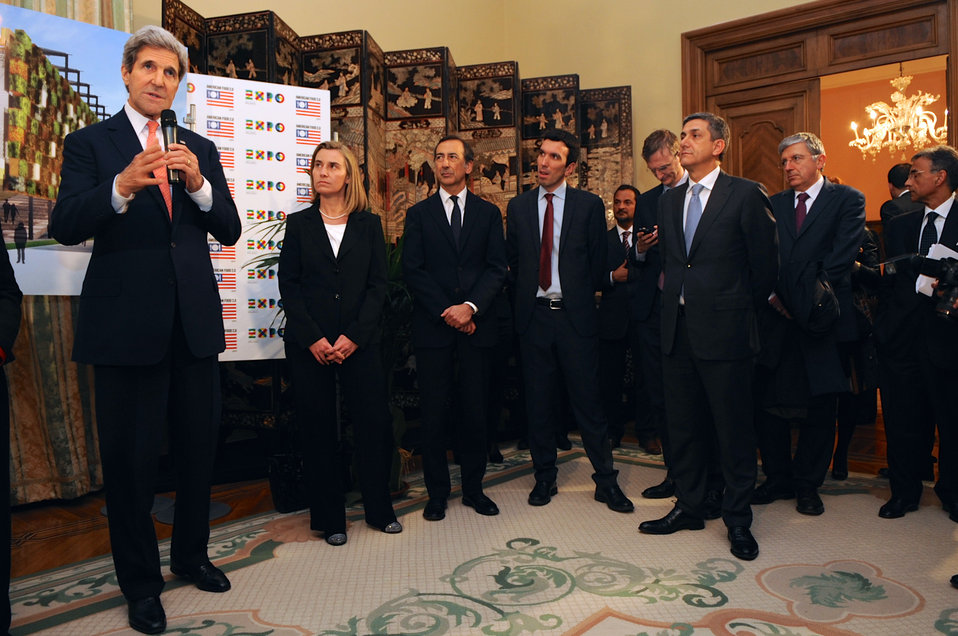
Secretary Kerry and Italian Foreign Minister Mogherini Salute U.S. Participation in Milan Expo 2015

U.S. Secretary of State John Kerry, flanked by Italian Foreign Minister Federica Mogherini and leaders of U.S. companies doing business in Italy, highlights an upcoming U.S. food pavilion at the Milan Expo 2015 during an appearance in Rome, Italy, on March 27, 2014.